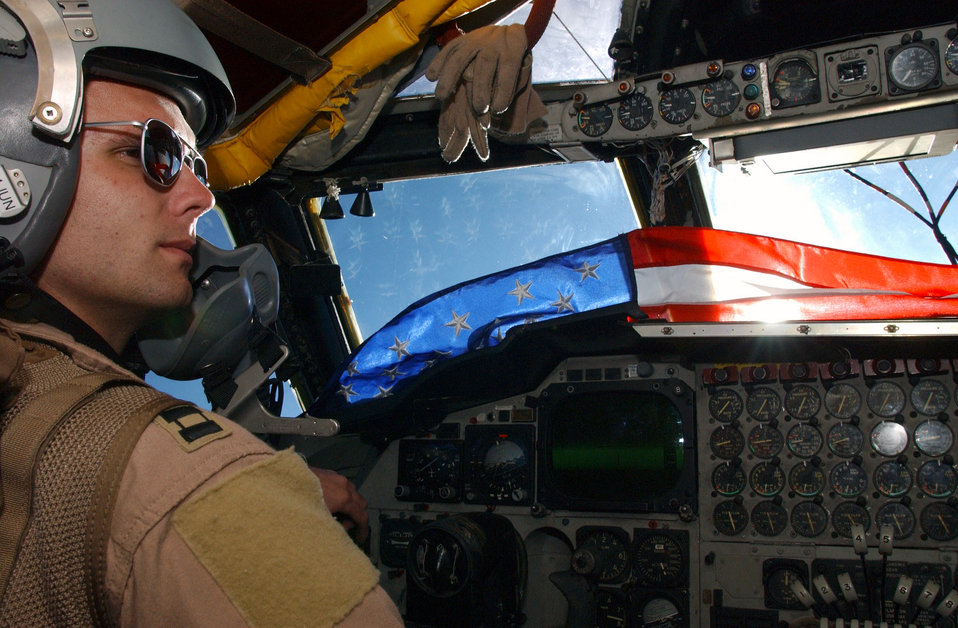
Over enemy skies

OPERATION ENDURING FREEDOM -- A B-52 Stratofortress pilot from the 40th Expeditionary Bomb Squadron scans the sky over Afghanistan, May 14, 2003, in support of Operation Enduring Freedom.